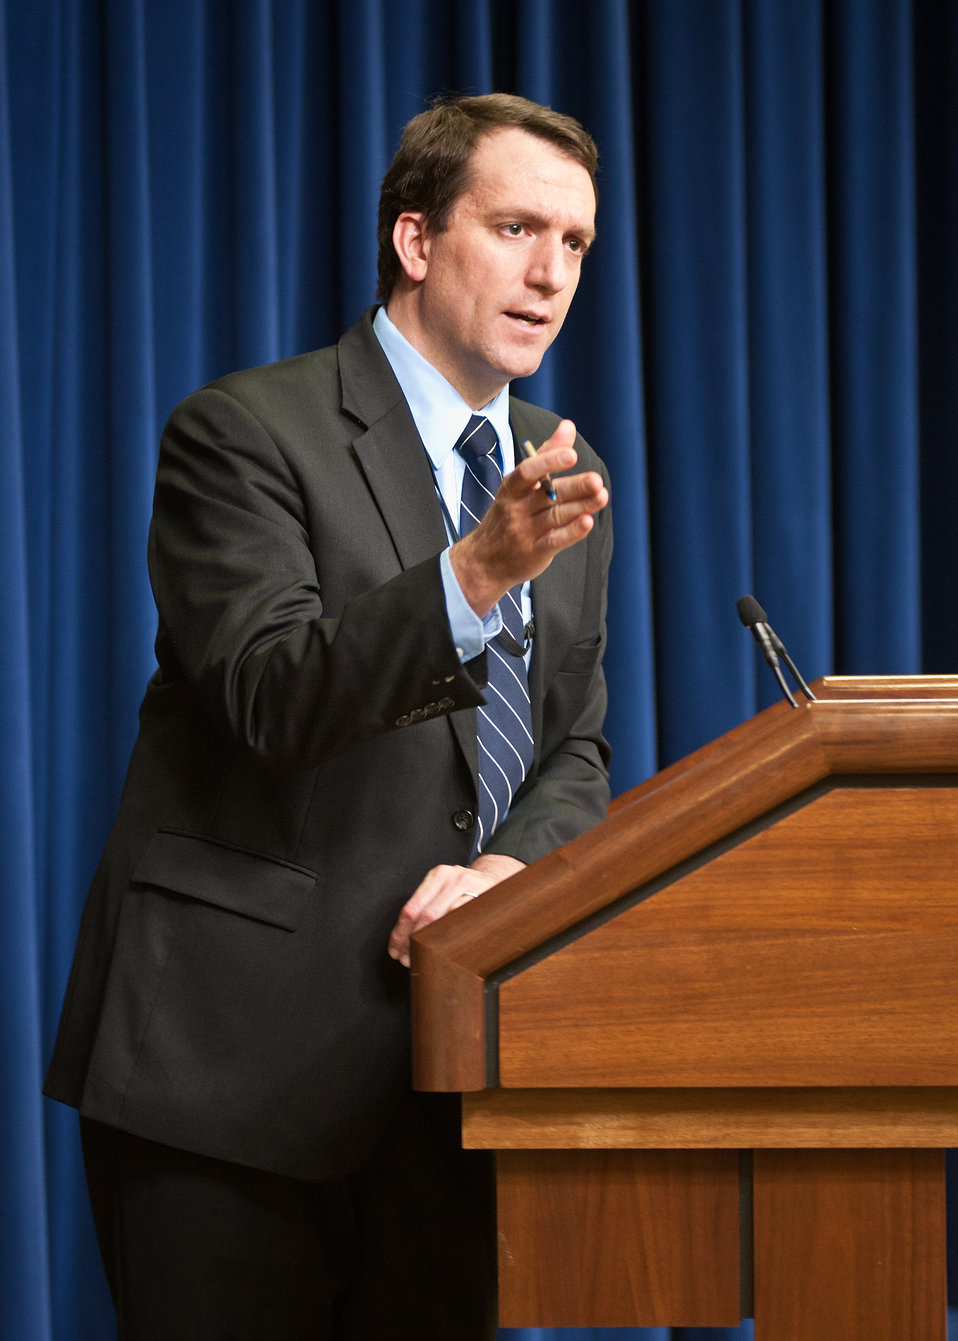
Jon Carson, White House, Director of Public Engagement discussed President Obama’s and the White House efforts in improving agriculture and rural America at the 11th Annual Meeting of State Agriculture and Rural Leaders at the Eisenhower Executive Office Building in Washington, D.C., onFriday, January 6, 2012.